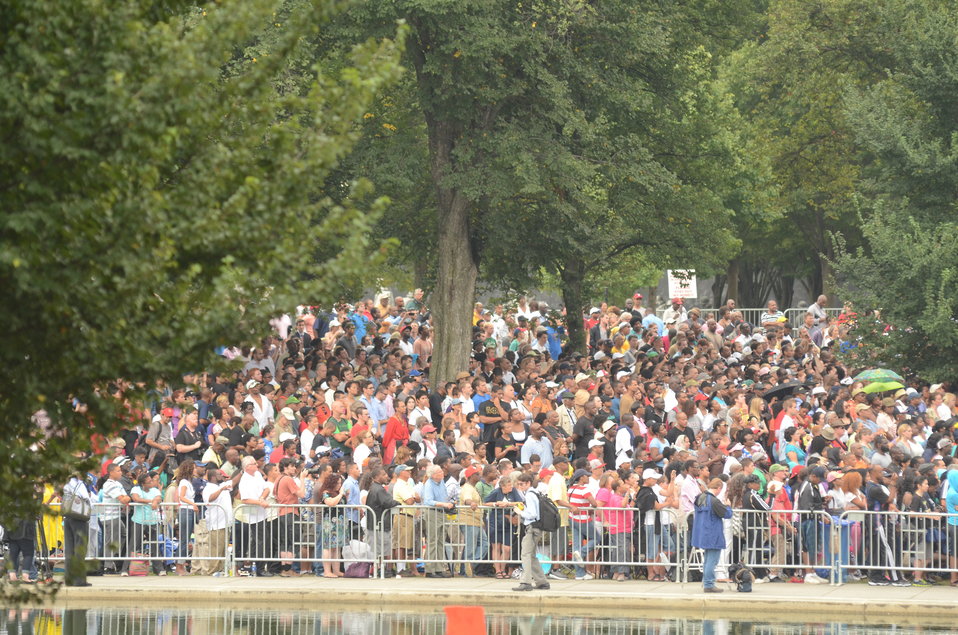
Marchers listen to speakers at the Lincoln Memorial for the March on Washington, D.C., on Wed., Aug. 28, 2013.